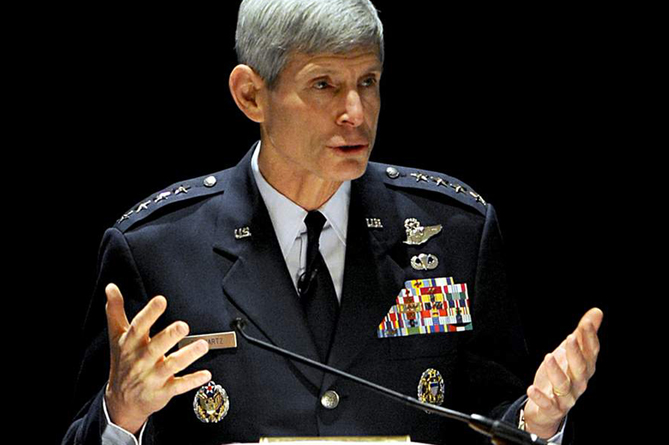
General Schwartz talks past, present of special ops

Air Force Chief of Staff Gen. Norton Schwartz discusses special operations forces during the National Defense Industrial Association's 22nd Annual Special Operations/Low Intensity Conflict Symposium Feb. 9, 2011, in Washington.